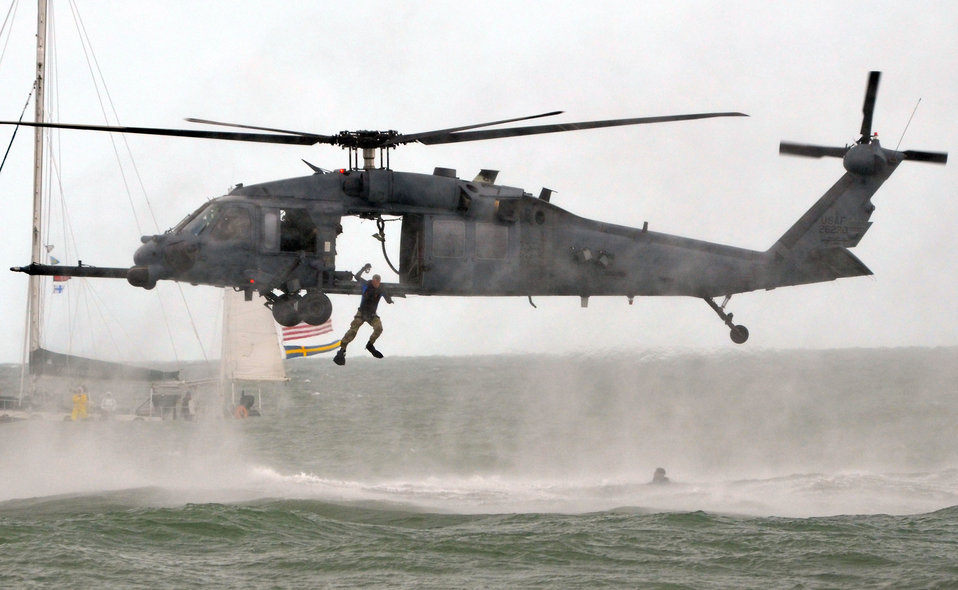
Help has arrived

Airmen from the 920th Rescue Wing perform a water rescue demonstration using an HH-60G Pave Hawk Nov. 5, 2011, during the Cocoa Beach Air Show 2011 in Cocoa Beach, Fla. .